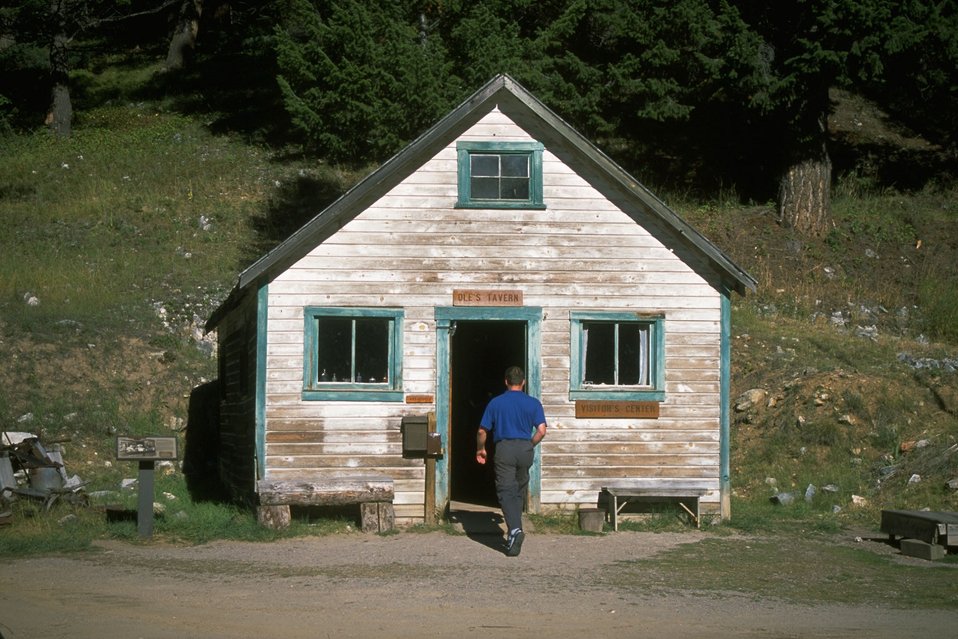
Ole's Tavern at Garnet Ghost Town